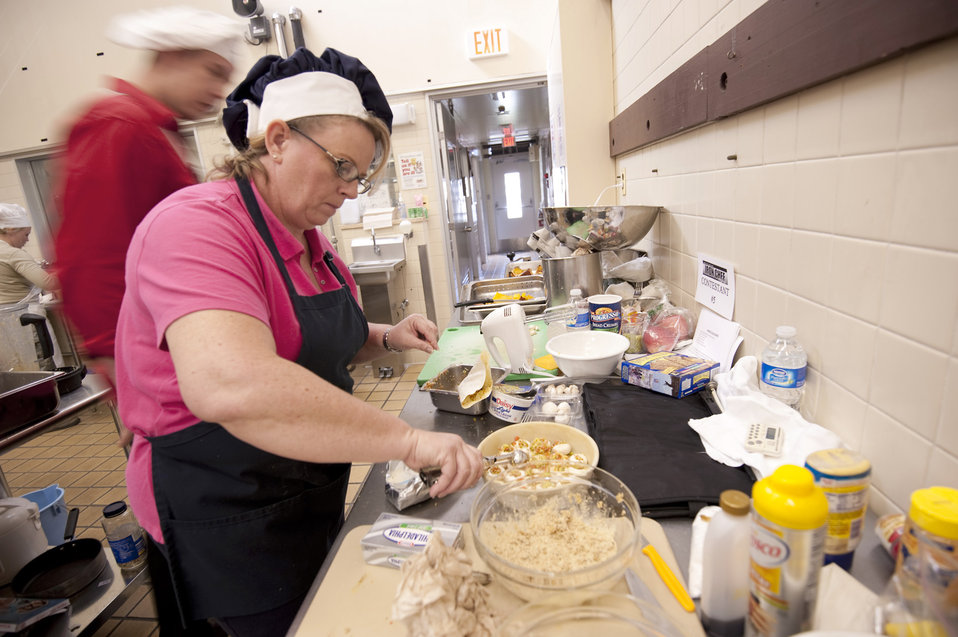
Iron Chefs

Erin Robinson prepares vegetable-stuffed mushrooms with pumpkin seeds as her side item for the